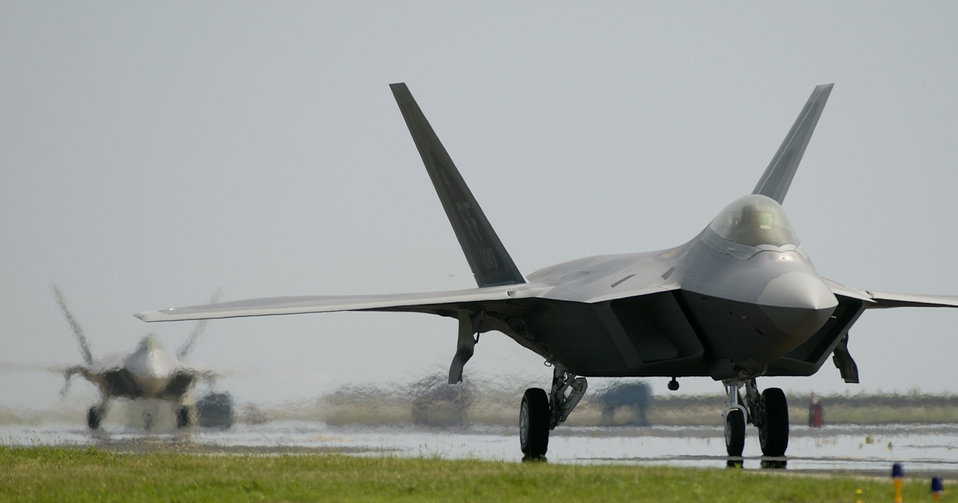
F-22 scheduled for first overseas deployment

Two F-22A Raptors taxi down the runway. A squadron of F-22 Raptors is scheduled to deploy to Kadena Air Base, Japan, as part of U.S. Pacific Command's Theater Security Package in the Western Pacific in early 2007. This will be the first overseas deployment for the Air Force's newest fighter.